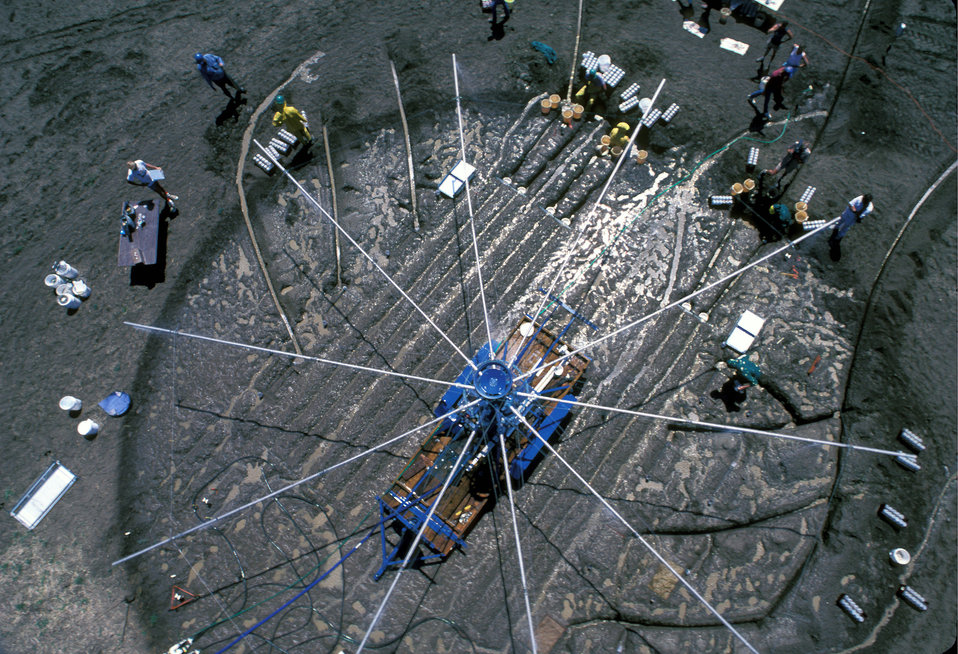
This rainfall simulator and test plot at Cottonwood, SD enable technicians to measure water runoff rates and collect soil samples in a U.S. Department of Agriculture (USDA) Agricultural Research Service (ARS) Water Erosion Prediction Project (WEPP) cropland field study.